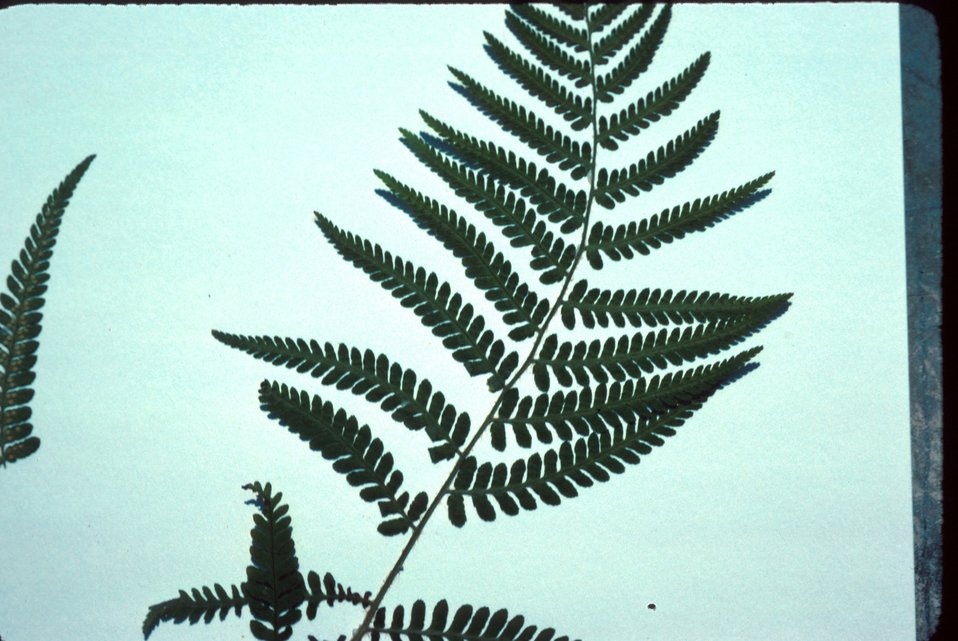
Dryopteris filix-mas Male fern Wildflower